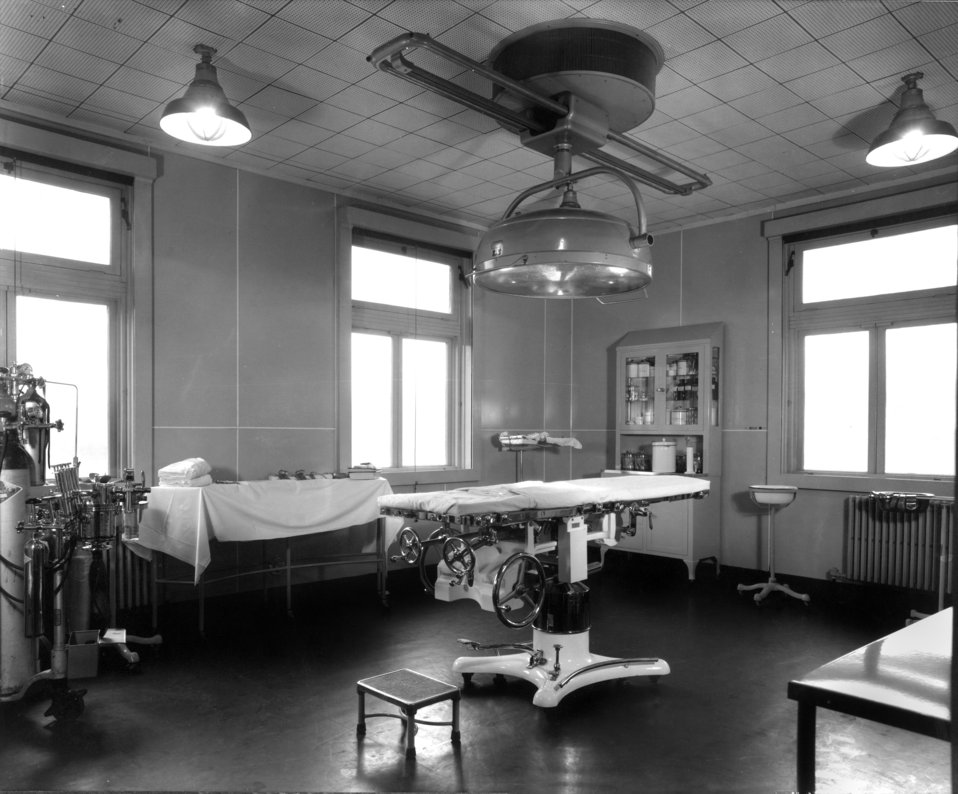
Hospital Operating Room Oak Ridge

MED 37 DOE photo by Ed Westcott 1947 Oak Ridge Tennessee